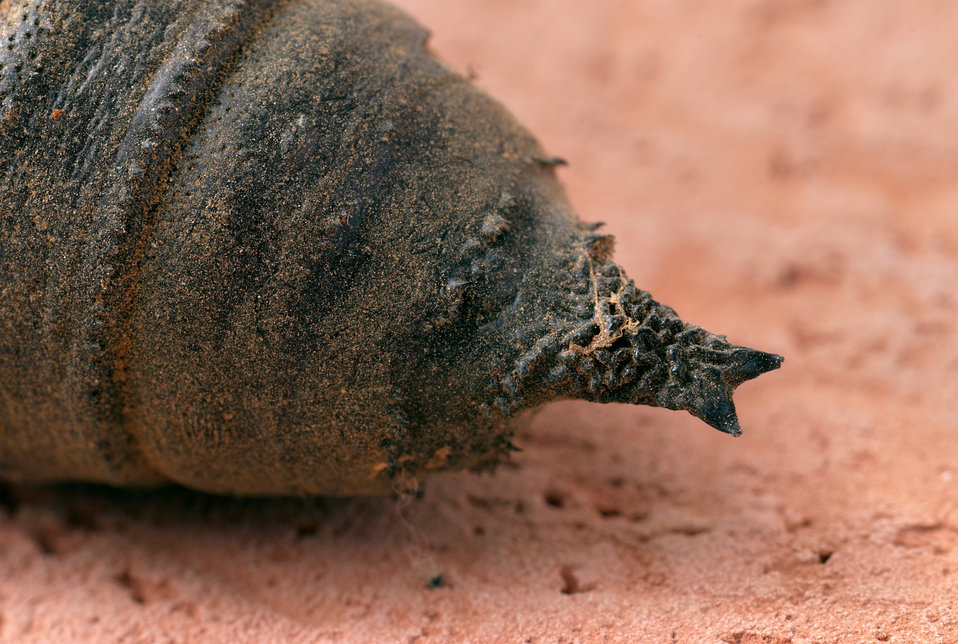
This 2008 image depicts a ventral view, i.e., from below, of a Regal Moth, Citheronia regalis pupa.